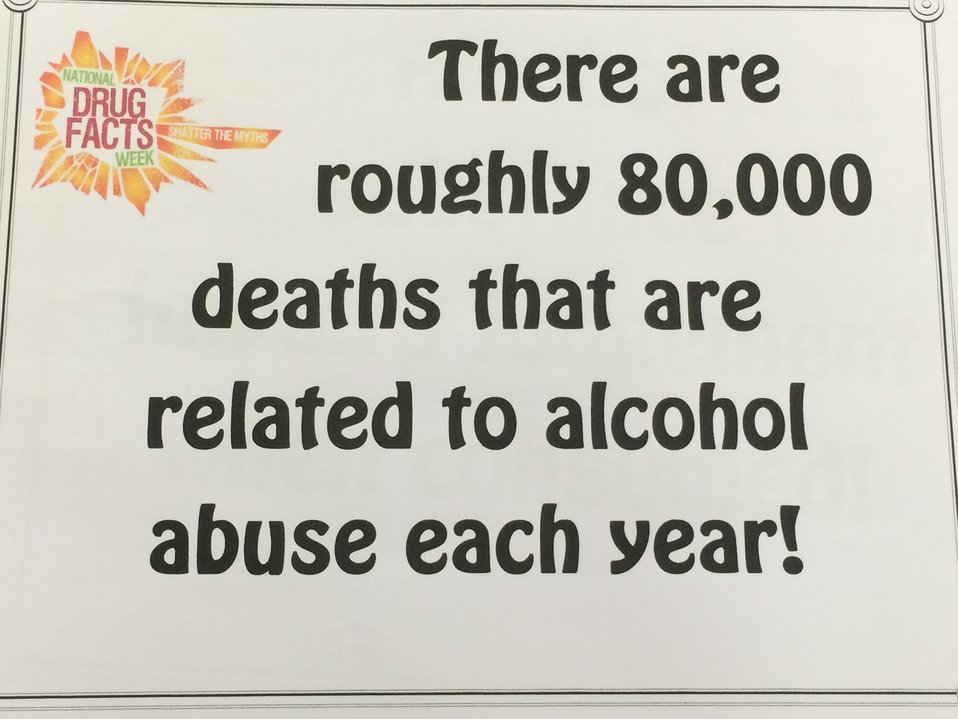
Just the Facts

Teenagers from the Van Buren County SAFE Coalition's, Youth Leadership Council (YLC) in Keosauqua, Iowa participate in various events during National Drug Facts Week, 2014.